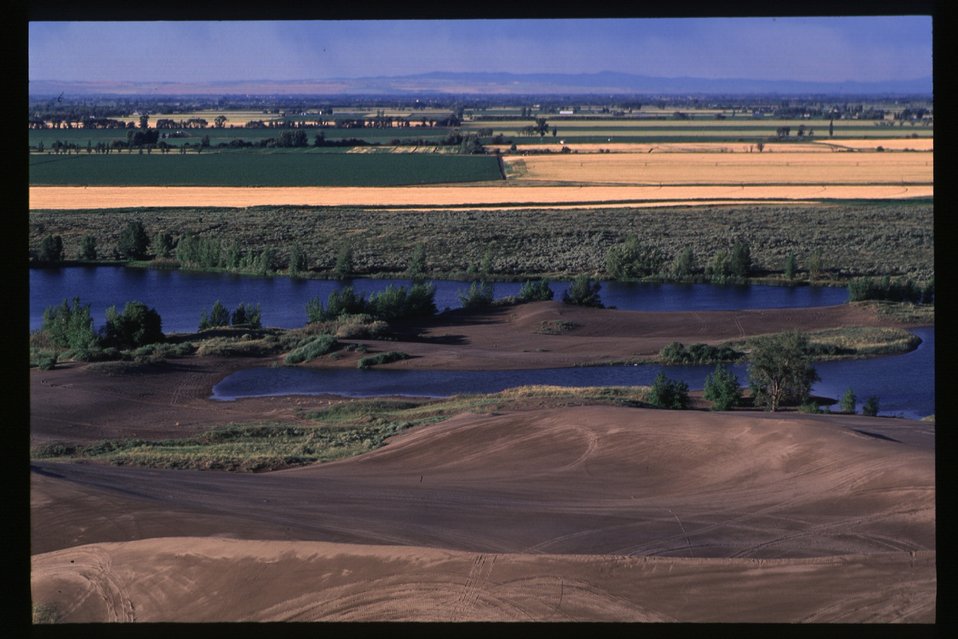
Recreation St Anthony Sand Dunes Overview Idaho Falls Field Office USRD Upper Snake River District